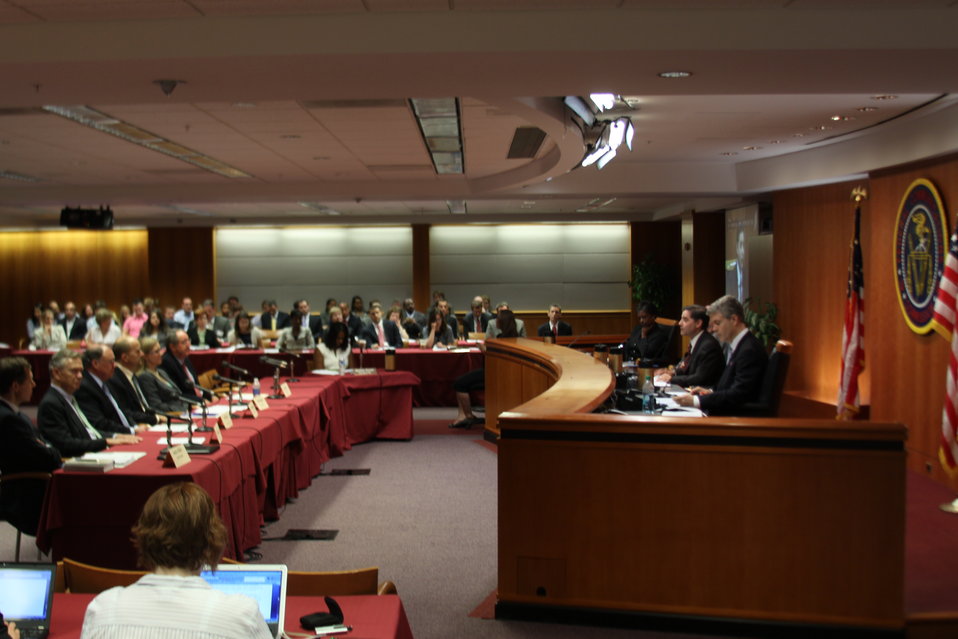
7/12/2011 Open Commission Meeting

The Media Bureau's remarks regarding Low Power Radio Service at the July 2011 Open Commission Meeting